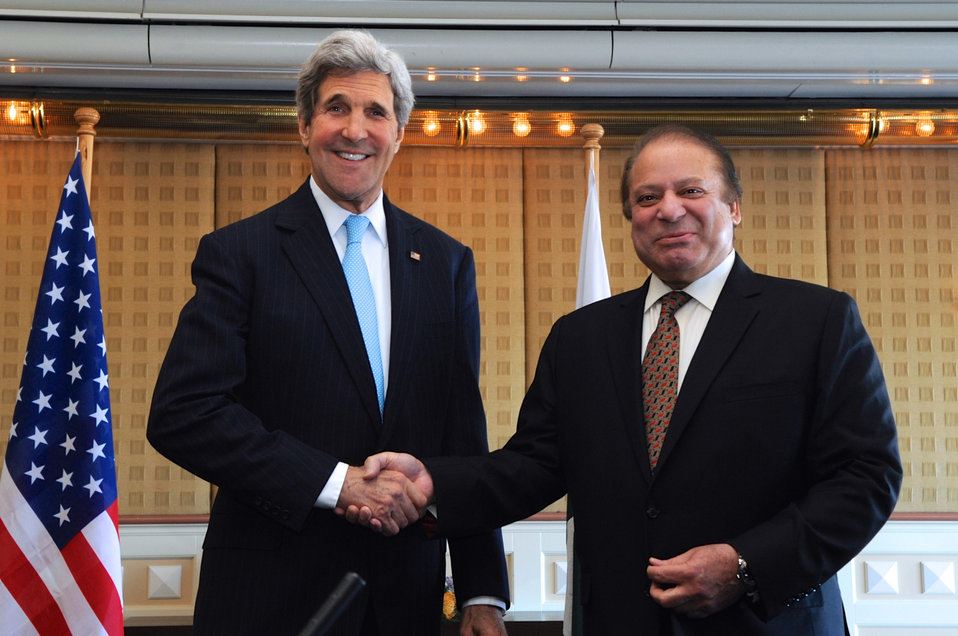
Secretary Kerry Shakes Hands With Pakistani Prime Minister Sharif in The Hague

U.S. Secretary of State John Kerry and Pakistani Prime Minister Nawaz Sharif shake hands before beginning a bilateral meeting on the margins of the Nuclear Security Summit at The Hague, the Netherlands, on March 24, 2014.